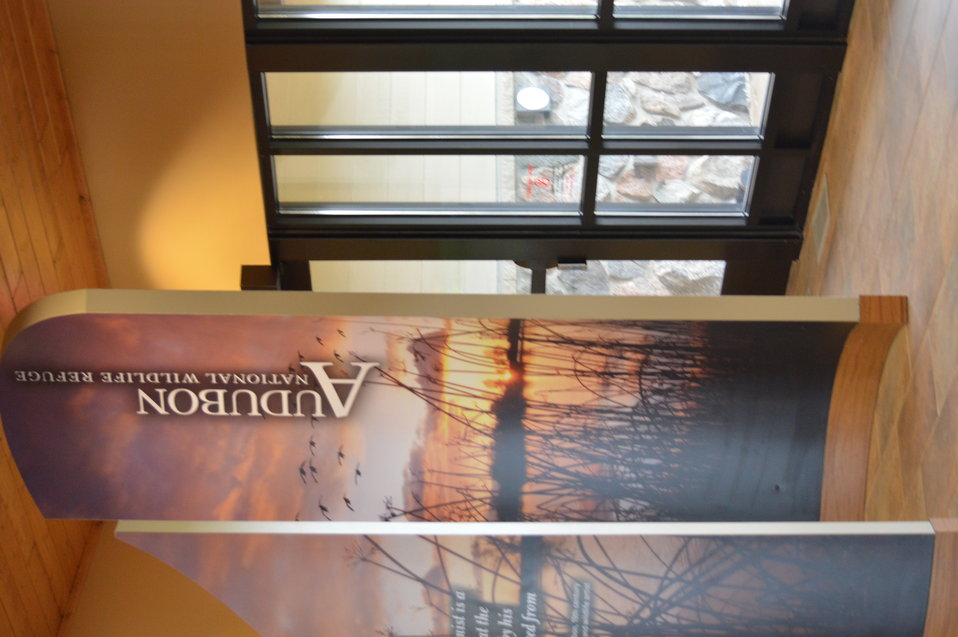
Inside the Exhibits

Exhibits in the Visitor's Center.